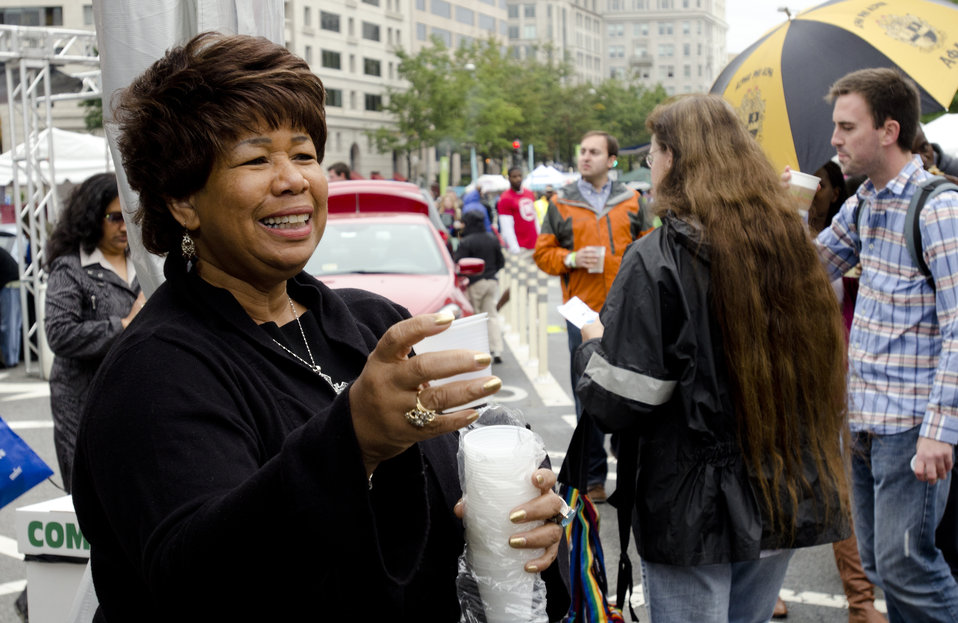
Shirley Harrington-Watson of the USDA Office of Communications hands out sample cups at the Taste of D.C., event that highlights more than 70 eateries, 30 specialty beer providers, the United Service Organization (USO) Metropolitan Washington, and live bands. It is anticipated that more than 500,000 people will attend over the course of the three-day event, which extends from the White House to the Capitol, along Pennsylvania Ave. in Washington D.C. on Sunday, October 7, 2012.